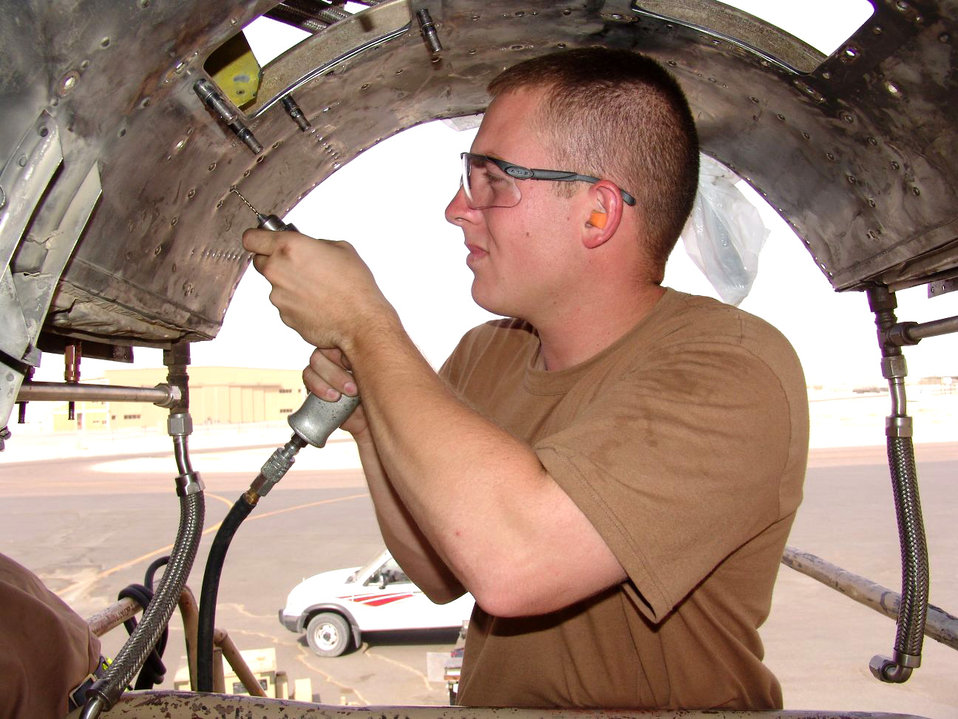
Coming out of its shell

SOUTHWEST ASIA -- Airman 1st Class Chad Cline removes rivets to replace part of a C-130 Hercules engine turtle shell assembly. A turtle shell assembly project can take up to 72 hours to complete. Airman Cline is an aircraft structural maintenance specialist with the 386th Expeditionary Aircraft Maintenance Squadron at a forward-deployed location. He is from Little Rock Air Force Base, Ark.